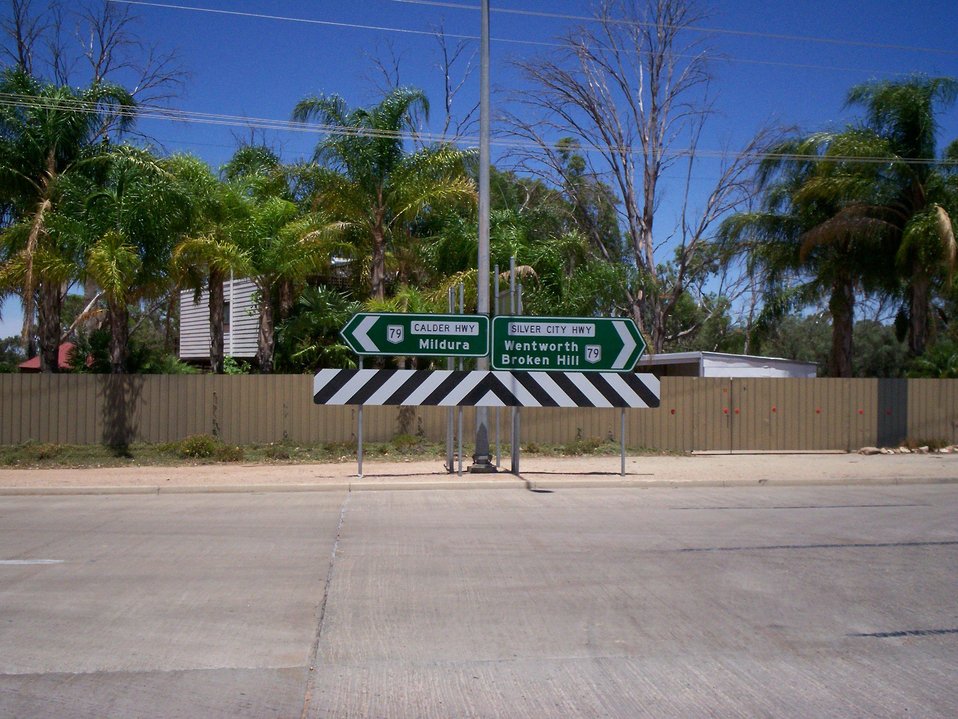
The end of the Calder Highway, where it becomes the Silver City Highway, near Curlwaa Category:Images of New South Wales